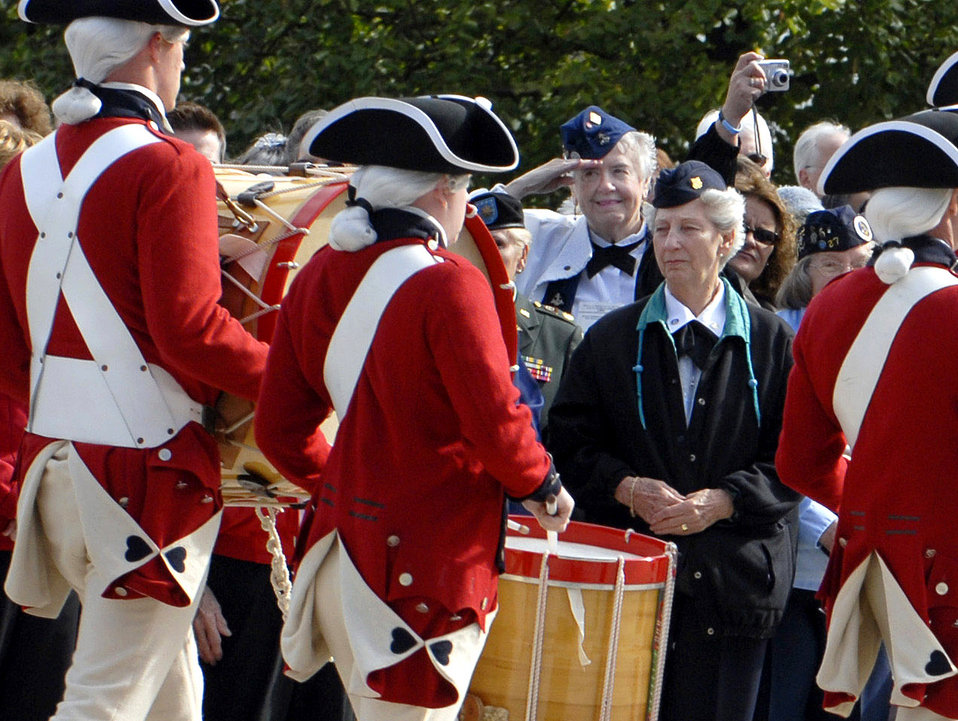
Presenting the colors

The U.S. Army Old Guard Fife and Drum Corps and the Armed Forces Color Guard post the colors during the ceremony Nov. 3 celebrating the 10th anniversary of the Women in Military Service for America Memorial at Arlington National Cemetery.